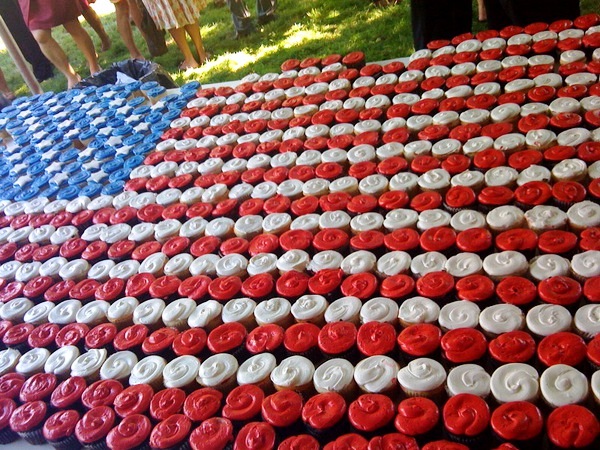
The American Flag Composed of Cupcakes

Cupcakes are arranged in the shape of the American flag at the U.S. Embassy Ottawa in Canada's U.S. Independence Day celebration at the Ambassador's residence Ottawa, Canada, on July 4, 2010.